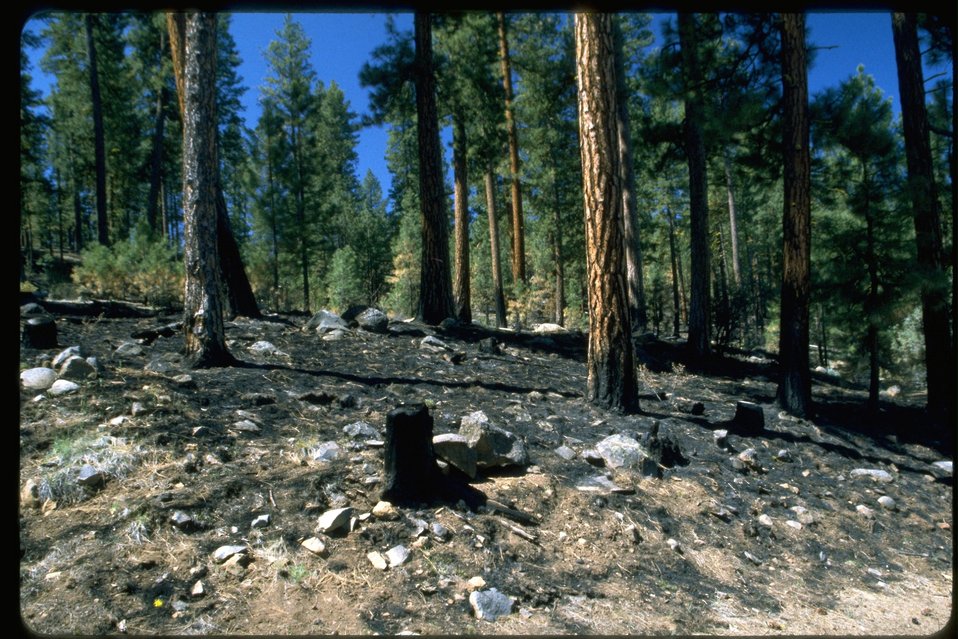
Prescribed burn area CCC (Civilian Conservation Corps) road near Barnes Valley.